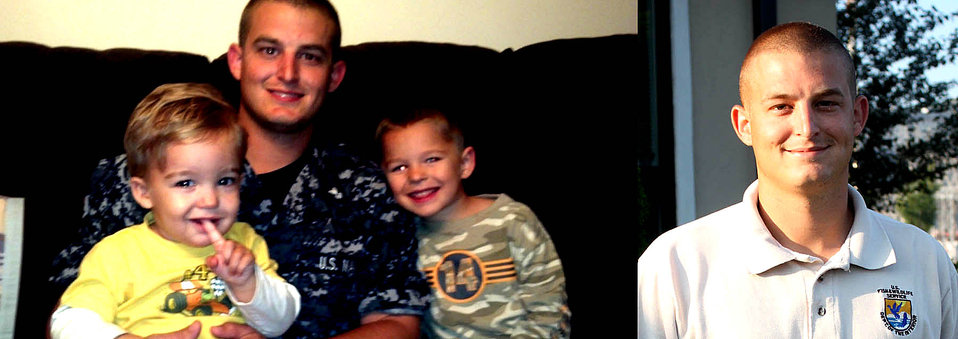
Mark Heath (Left) Mark Heath with sons Levi and James. .
Mark entered the US Navy in August of 2008. His duty stations included Dam Neck, Virginia; Naval Security Forces (NSF) Millington, TN; and Navy Operational Support Center (NOSC) Nashville, TN. He completed a mobilization with Joint Task Force (JTF) Guantanamo Bay, Cuba in 2011-2012. He is currently a Petty Officer Second Class (E-5) Master-at-Arms serving in the navy reserve in NOSC Nashville. .
.
Some of Mark’s awards include Navy and Marine Corps Achievement Medal, Meritorious Service Ribbon, Global War on Terror Expeditionary, and Armed Forces Service Ribbons..
.
Mark Heath is an Animal Caretaker at the Wolf Creek NFH in Jamestown, KY.